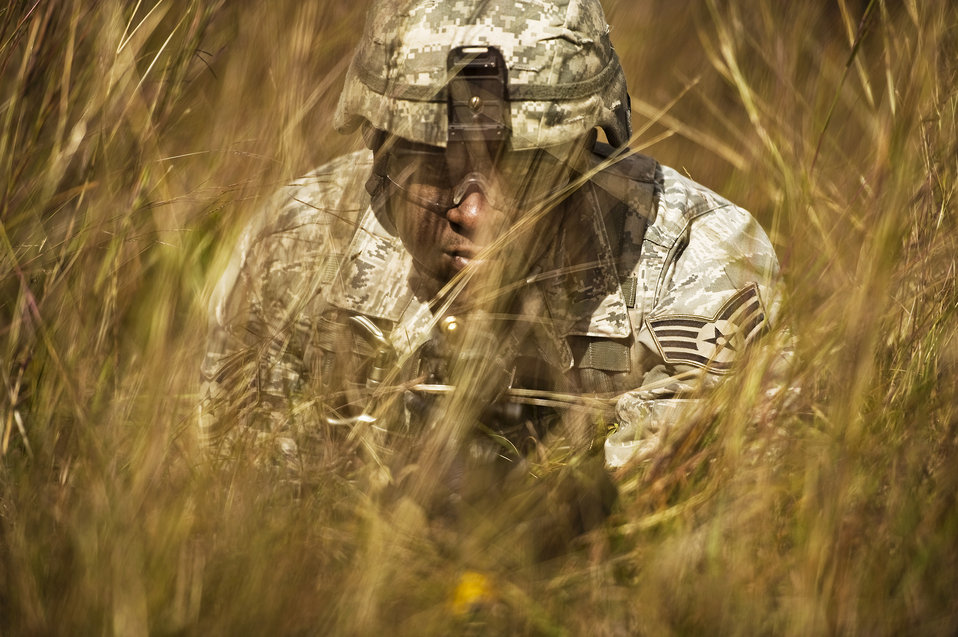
Defense at the ready

Staff Sgt. Alfonte Thomas provides security during a foot patrol while attending the Combat Leadership Course at Camp Bullis, Texas, Nov. 9, 2010. Airmen attending the course gain leadership experience from classroom and field training.